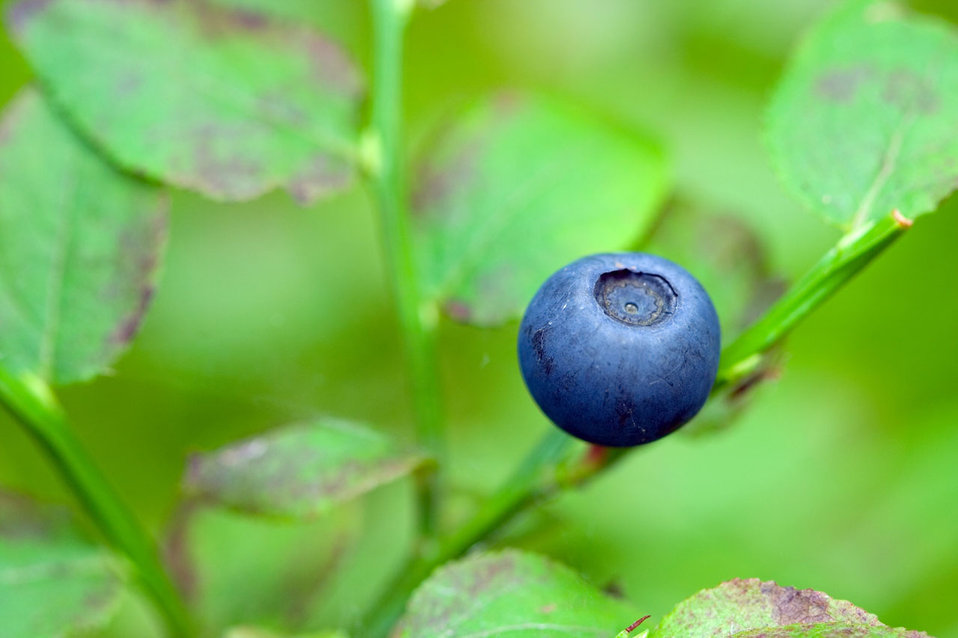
Blueberry

Close up image of a blueberry in the forest.